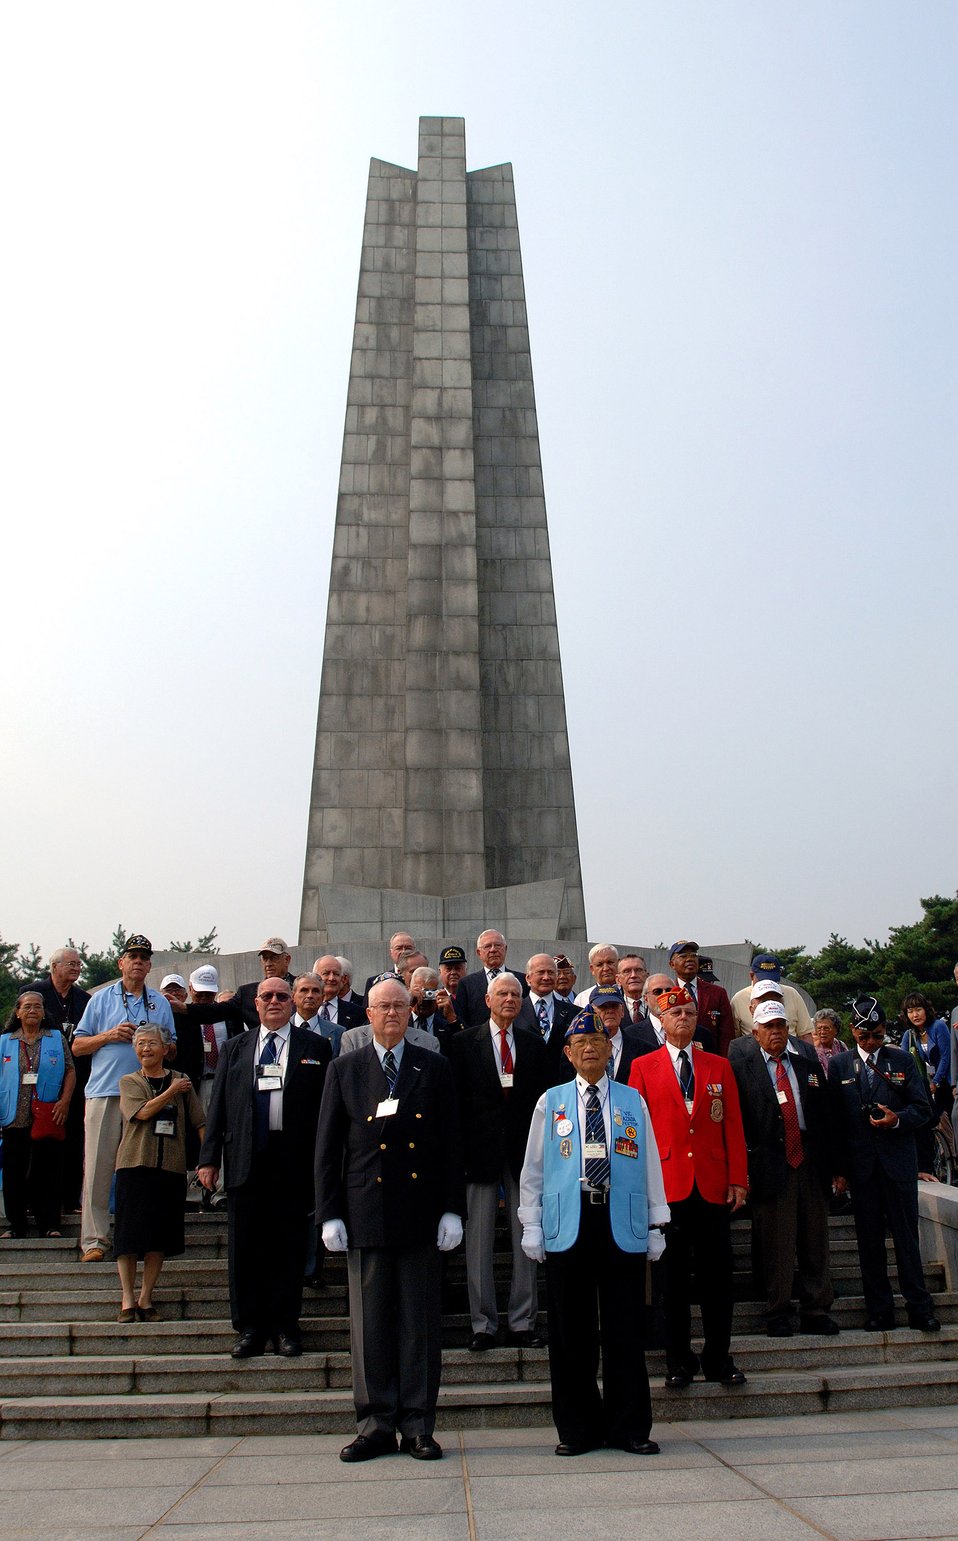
Korean War veterans give sage advice to Airmen

More than 200 Korean War veterans and family members stand before the Korean War monument at the South Korean National Cemetery Sept. 12. The South Korean government's Revisit Korea program invites war veterans each year to come to South Korea to honor the men and woman from 21 countries who served during the Korean War. Nearly 25,000 veterans have participated in this program since 1975.